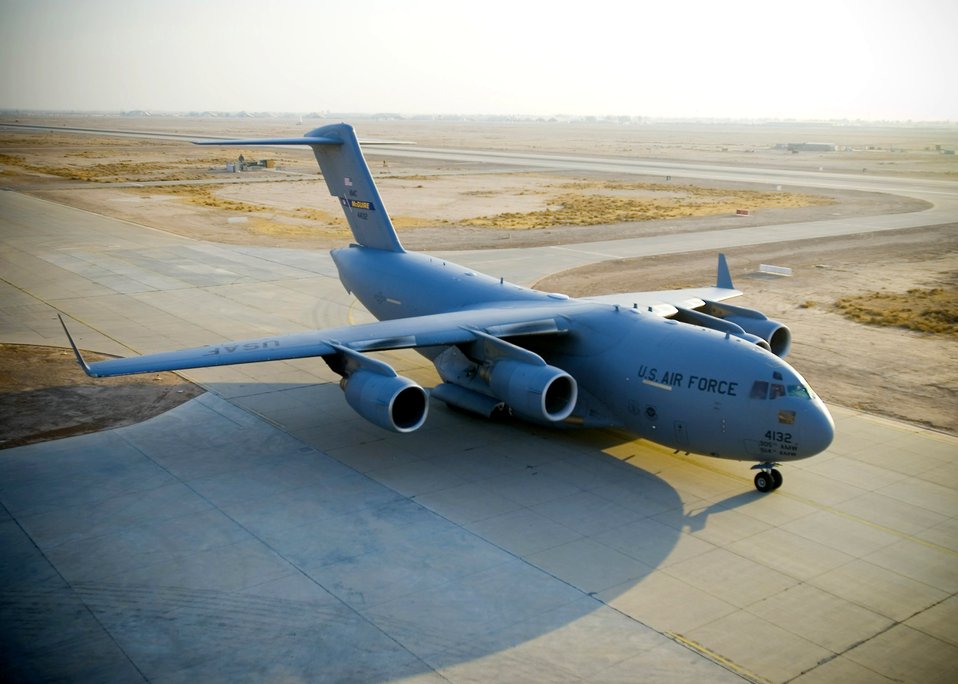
Jan. 8 airpower summary: C-17s fly aeromedical evacuations

A C-17 Globemaster III taxies to the ramp at Balad Air Base, Iraq. The C-17 performs tactical airlift and airdrop missions, and transports litters and ambulatory patients during aeromedical evacuations in support of operations Enduring Freedom and Iraqi Freedom.